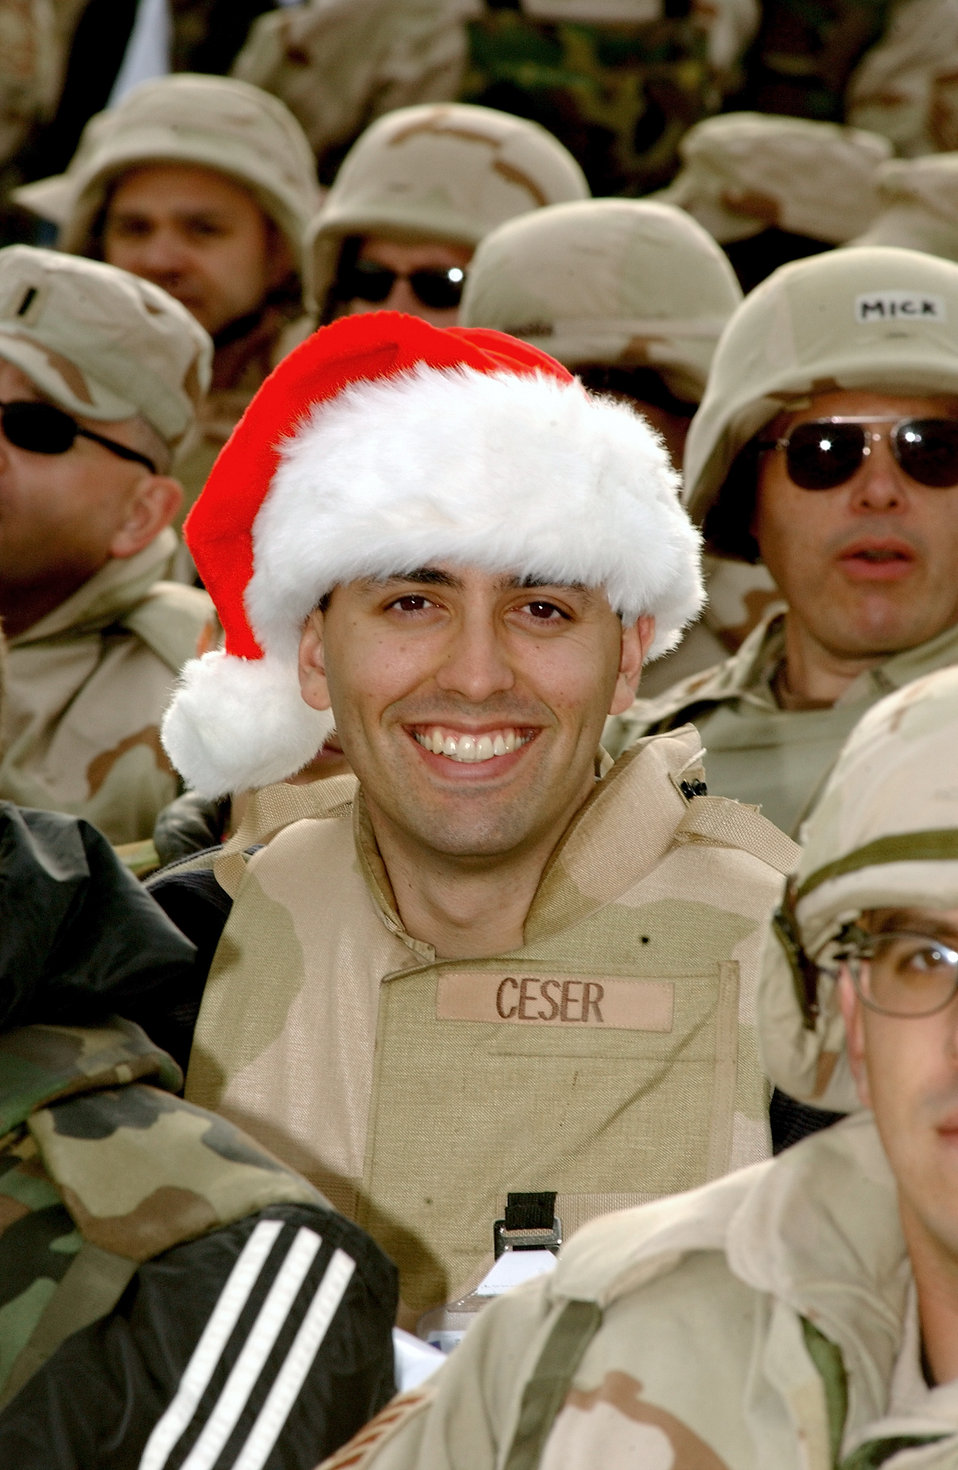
'Airman Claus'

BAGHDAD, Iraq -- Festive audience member Senior Airman Michael Ceser waits Dec. 16 for the arrival of a United Service Organizations-sponsored show. Ceser is assigned to the 447th Expeditionary Airlift Control Squadron.